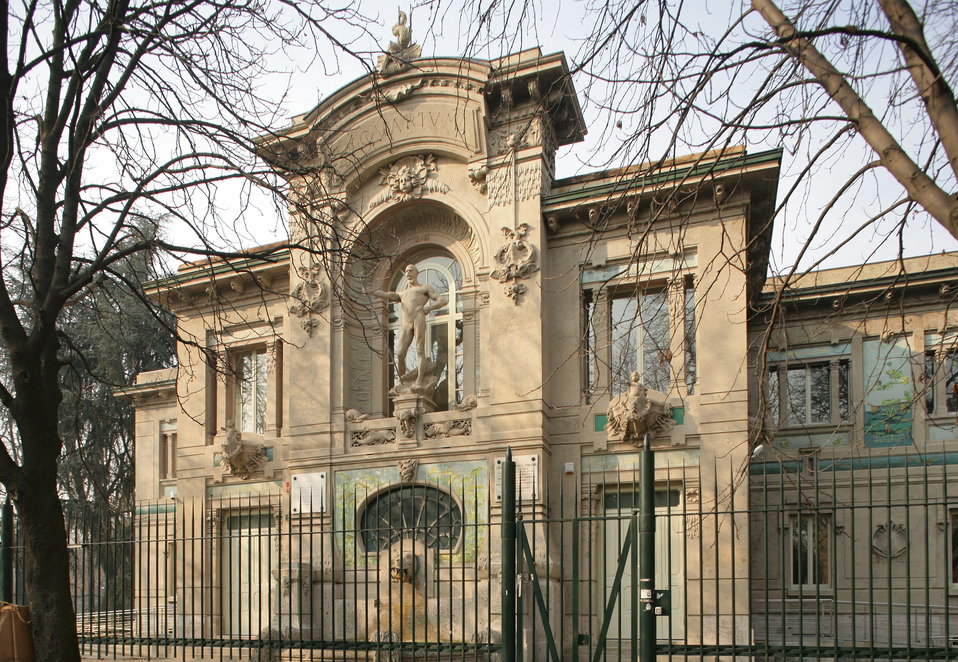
Italiano: L'Acquario civico di Milano fu costruito in occasione dell'Eposizione mondiale di Milano del 1906 da Sebastiano Giuseppe Locati (1861-1939), e ricostruito dopo le distruzioni della seconda guerra mondiale. La statua di Nettuno sulla facciata è opera di Oreste Labò (1865-1929). Foto di Federico Brunetti.